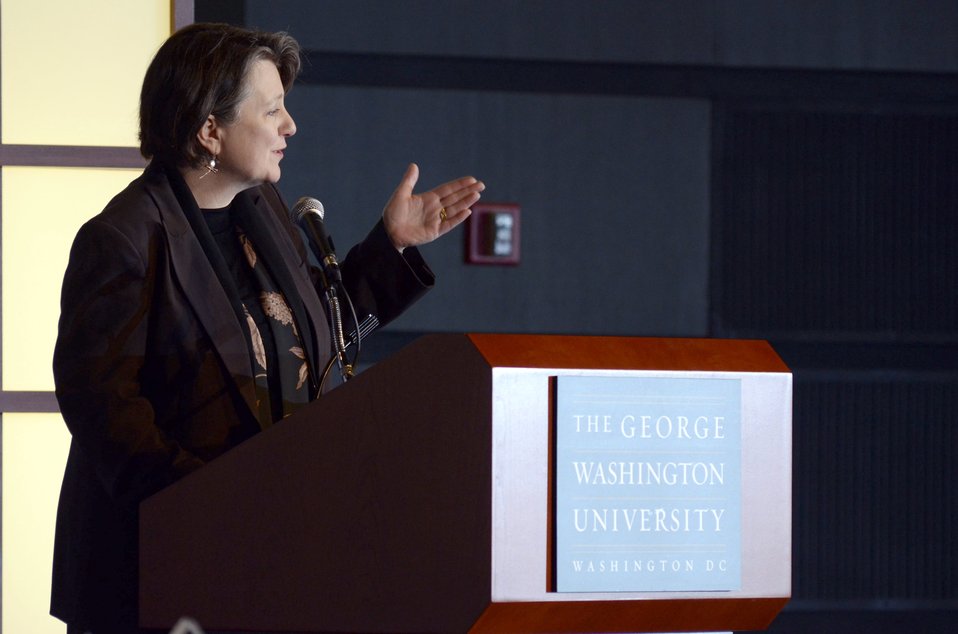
Agriculture Deputy Secretary Dr. Kathleen Merrigan keynote speaker 'Shaping the Farm Bill for a Sustainable Future.' Forum at the Trachtenberg School of Public Policy and Public Administration, George Washington University in Washington, D.C., on Thursday, March 1, 2012.